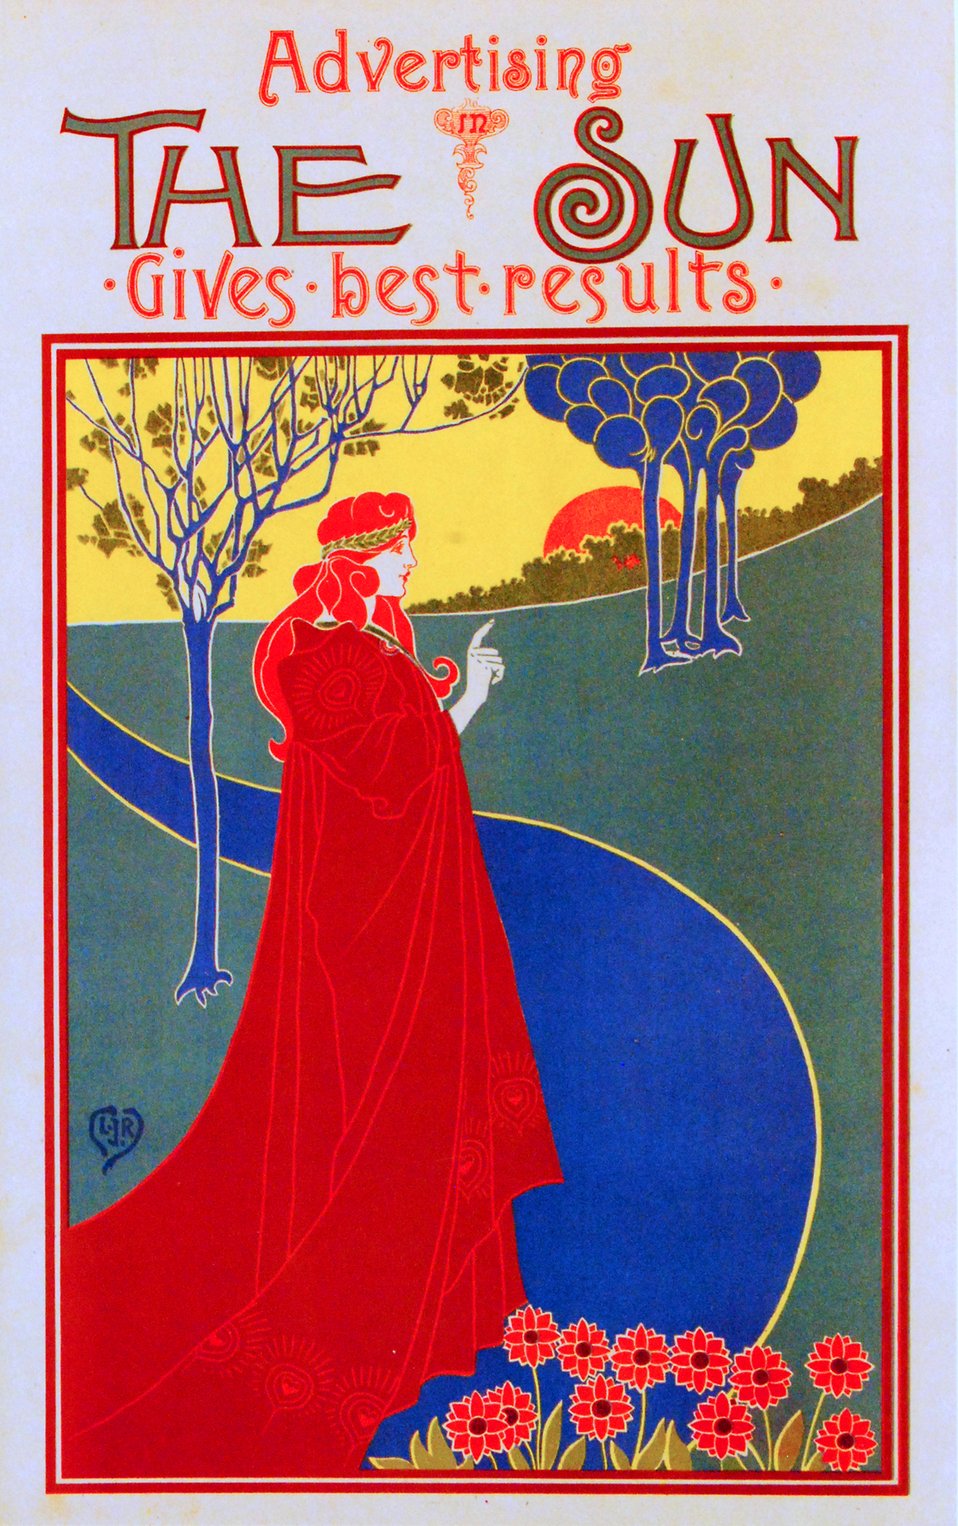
Nederlands: Affiche: 'Advertising in The Sun gives the best results'.